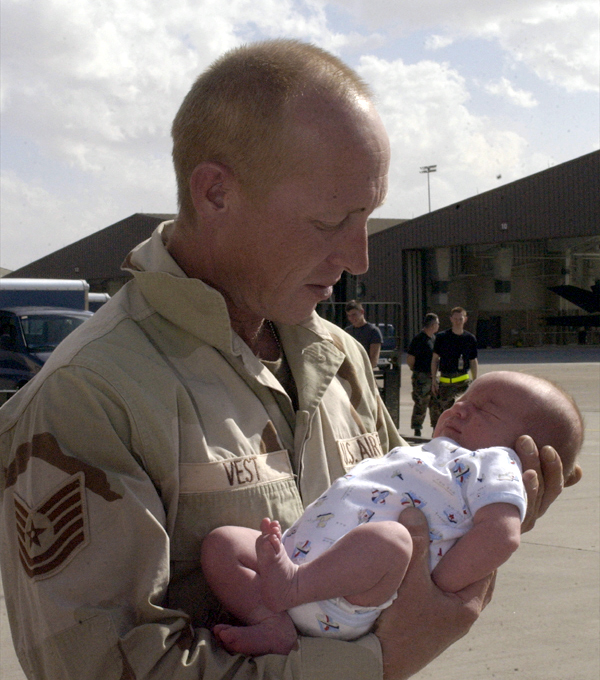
Father and son

HOLLOMAN AIR FORCE BASE, N.M. -- Tech. Sgt. Joseph Vest, a support airman for the 8th Fighter Squadron here, meets his 1-week-old son, Joseph Jr., for the first time after returning from a deployment. He was one of the airmen who returned April 17 after supporting Operation Iraqi Freedom. About 300 people from Holloman AFB who deployed will return this month.